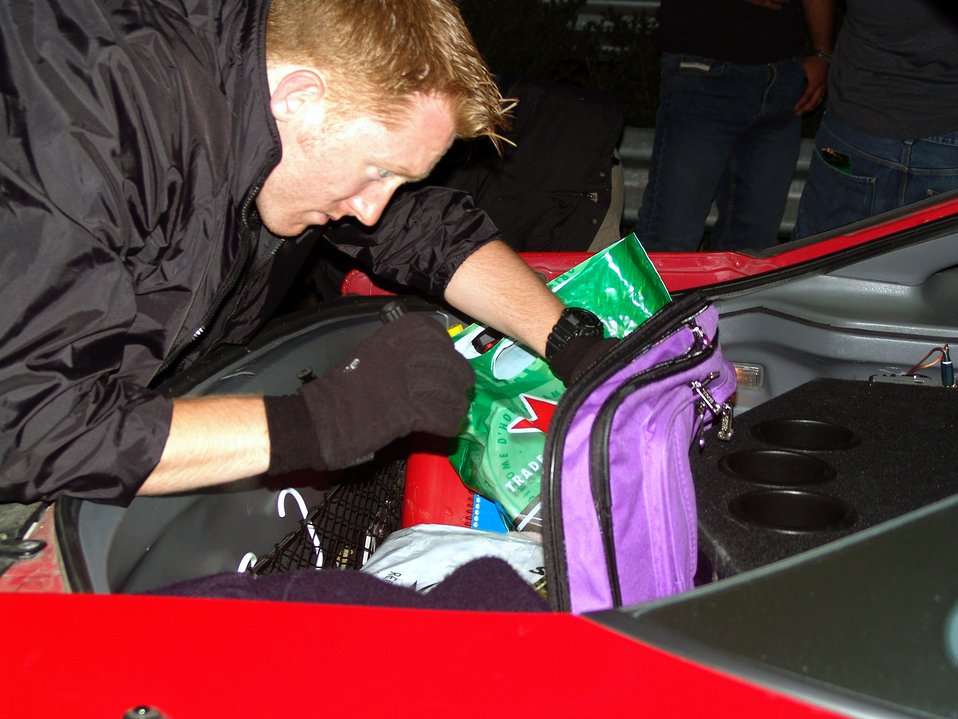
OSI works with local customs to stop drug smuggling

Air Force Office of Special Investigations Special Agent Matthew Mitchell searches the trunk of an American vehicle for illegal substances during a random vehicle check point with German Customs. Agent Mitchell is assigned to Spangdahlem Air Base, Germany.